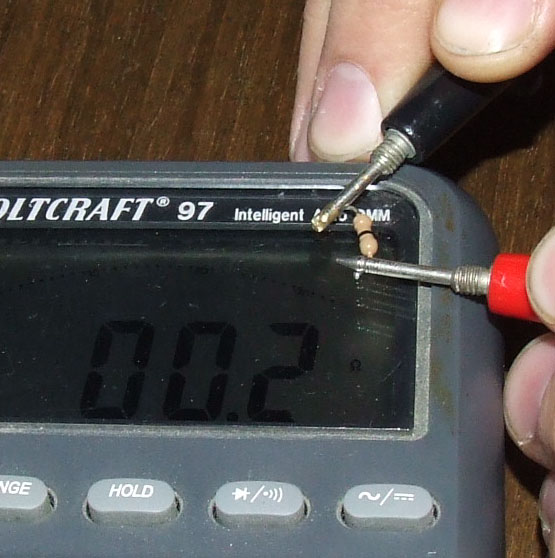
I just took a picture of resistor being measured. It is my picture.